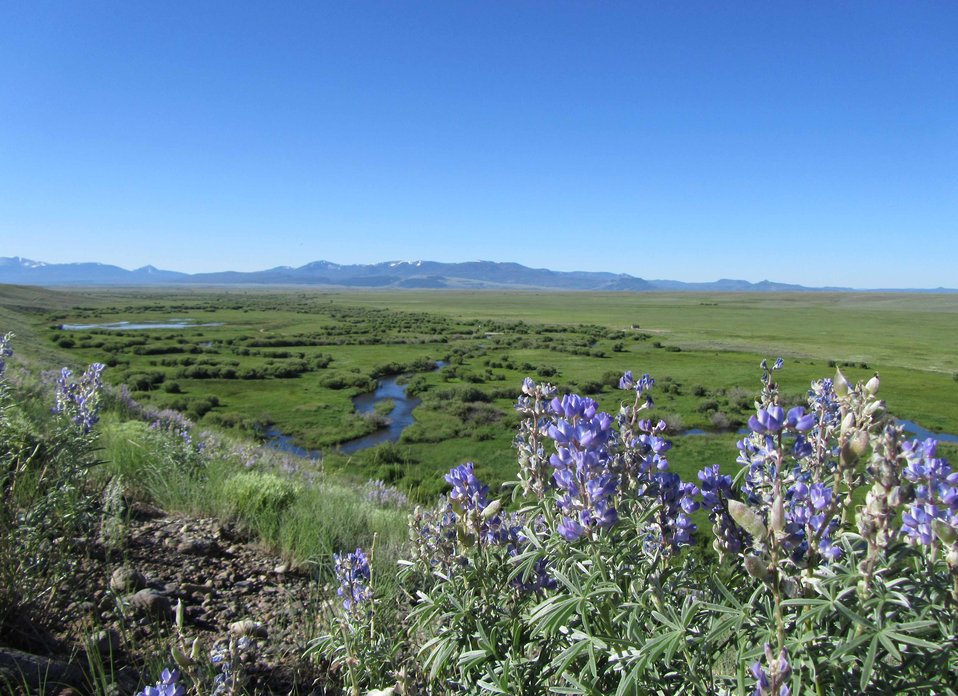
View of Arapaho National Wildlife Refuge

During the summer months, Arapaho National Wildlife Refuge enjoys just enough sun and rain to green the bottomlands and upland slopes. The refuge is located in an intermountain glacial basin south of Walden, county seat of Jackson County, Colorado. Photo taken July 25.